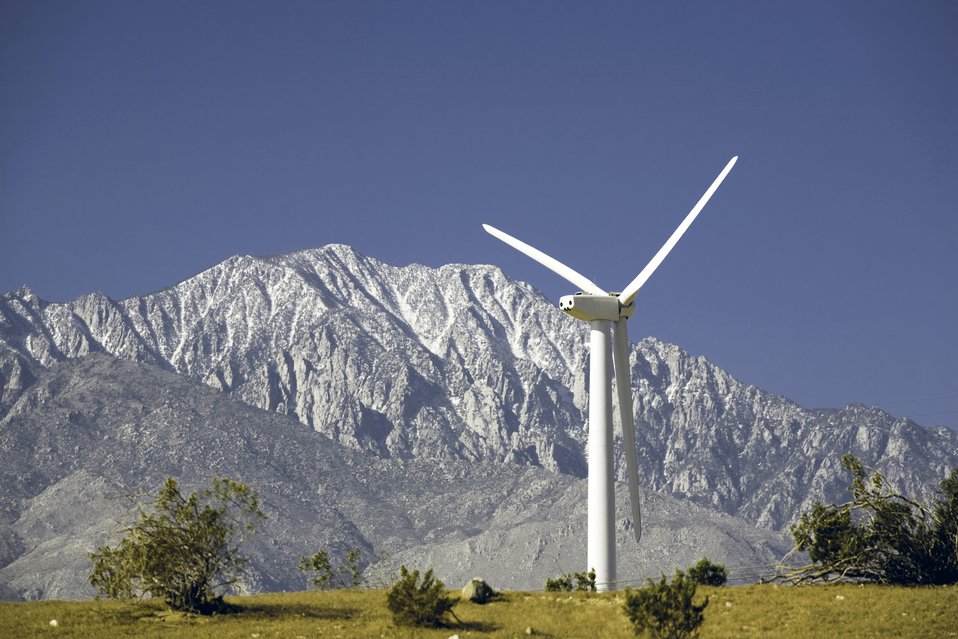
DILLION WIND POWER PROJECT